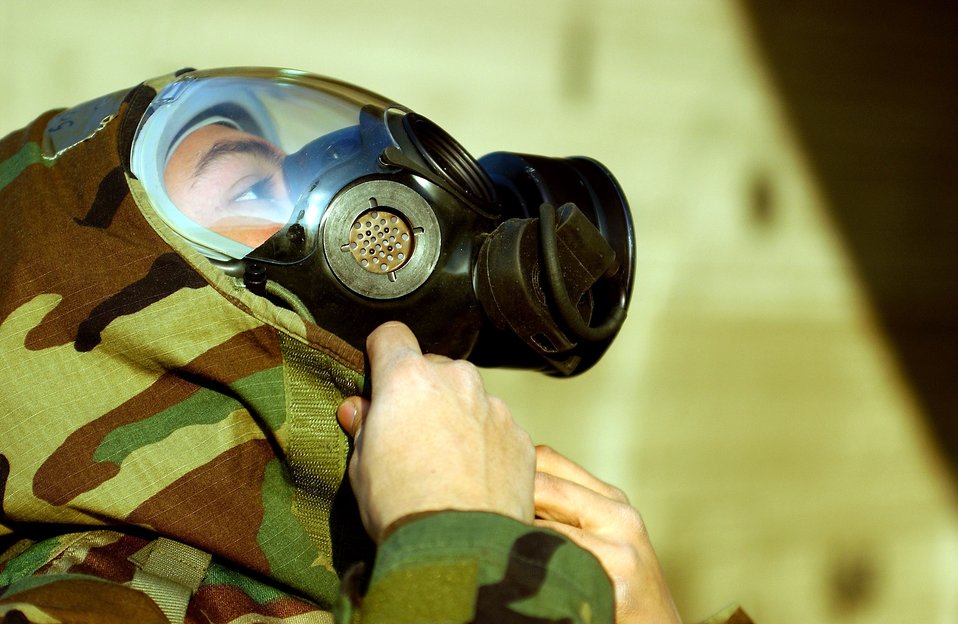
Beverly Bulldog 06-01

OSAN AIR BASE, South Korea (AFPN) -- Senior Airman Josue Mendo dons his chemical defense gear during exercise Beverly Bulldog 06-01 here Jan. 24. Exercise scenarios test the base's ability to protect its operations from attacks or enemy forces. Airman Mendo is with the 51st Munitions Squadron.